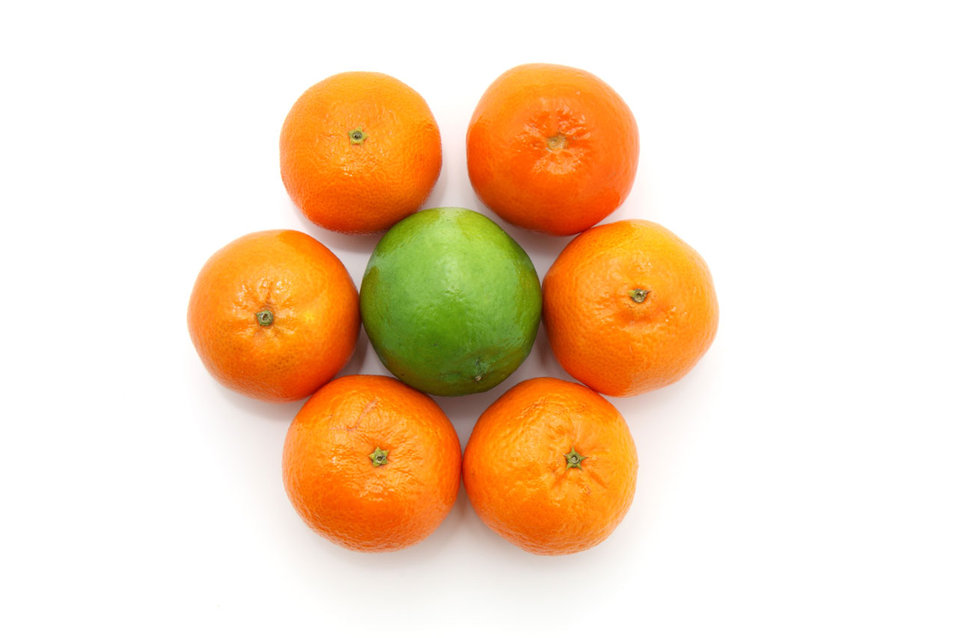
Citrus flower

Flower made from citrus fruit.